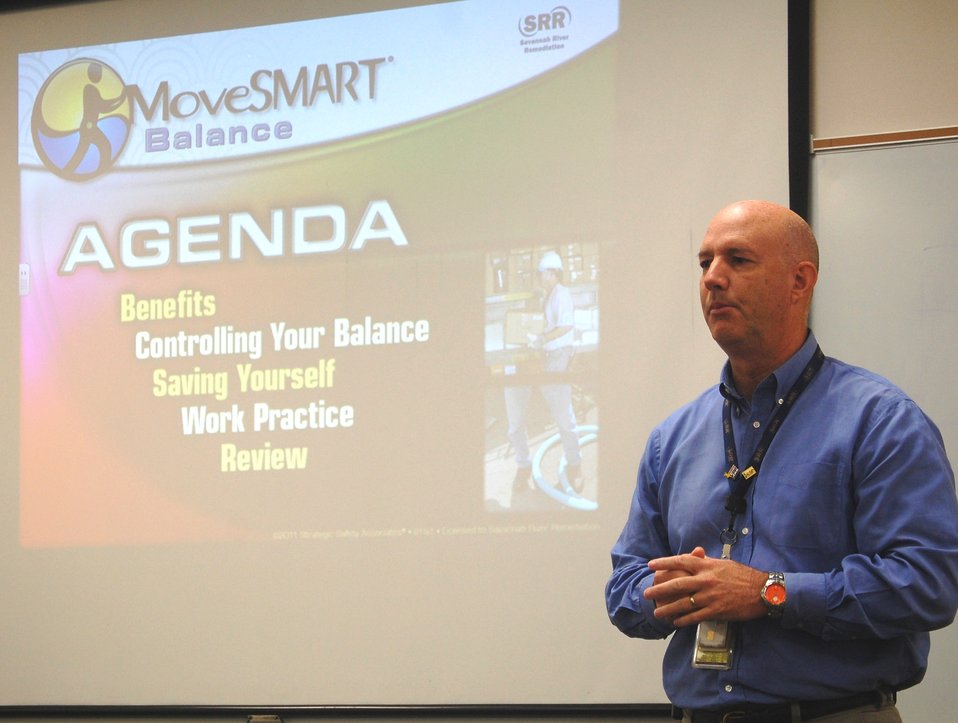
Employees Surpass 10 Million Hours Without Days Away Due to Work Injuries

SRR Safety and Health Programs Manager Kevin Smith discusses the new MoveSMART safety initiative with SRR employees. That program uses a reinforcement-based process to reduce injuries, sprains, slips, trips and falls.